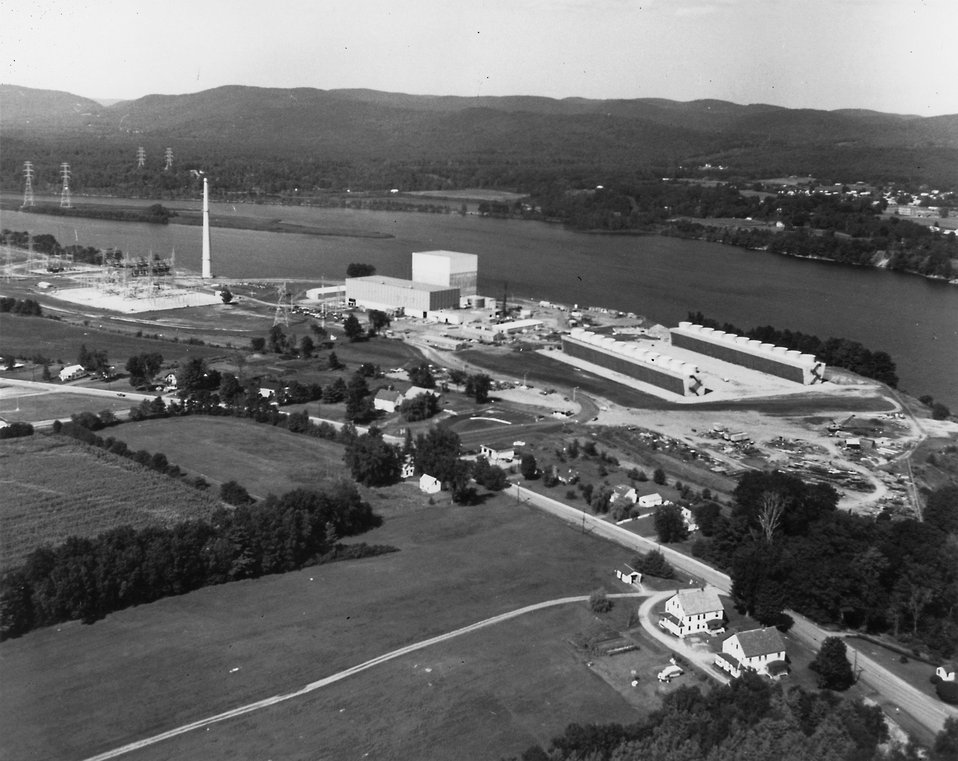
Aerial view of Vermont Yankee Nuclear Generating Station near Vernon, Vt. The station's boiling water reactor delivers 513,900 kilowatts of electric power. Circa 1974.